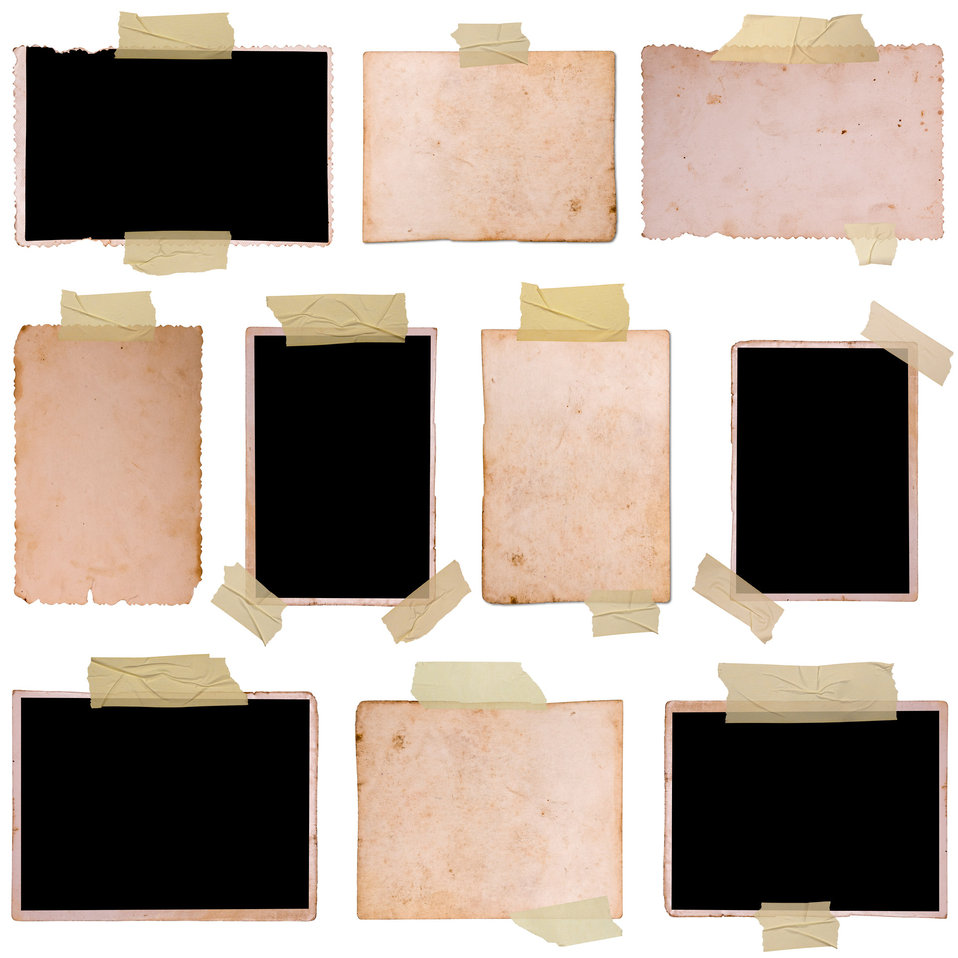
Frames

Frame power.